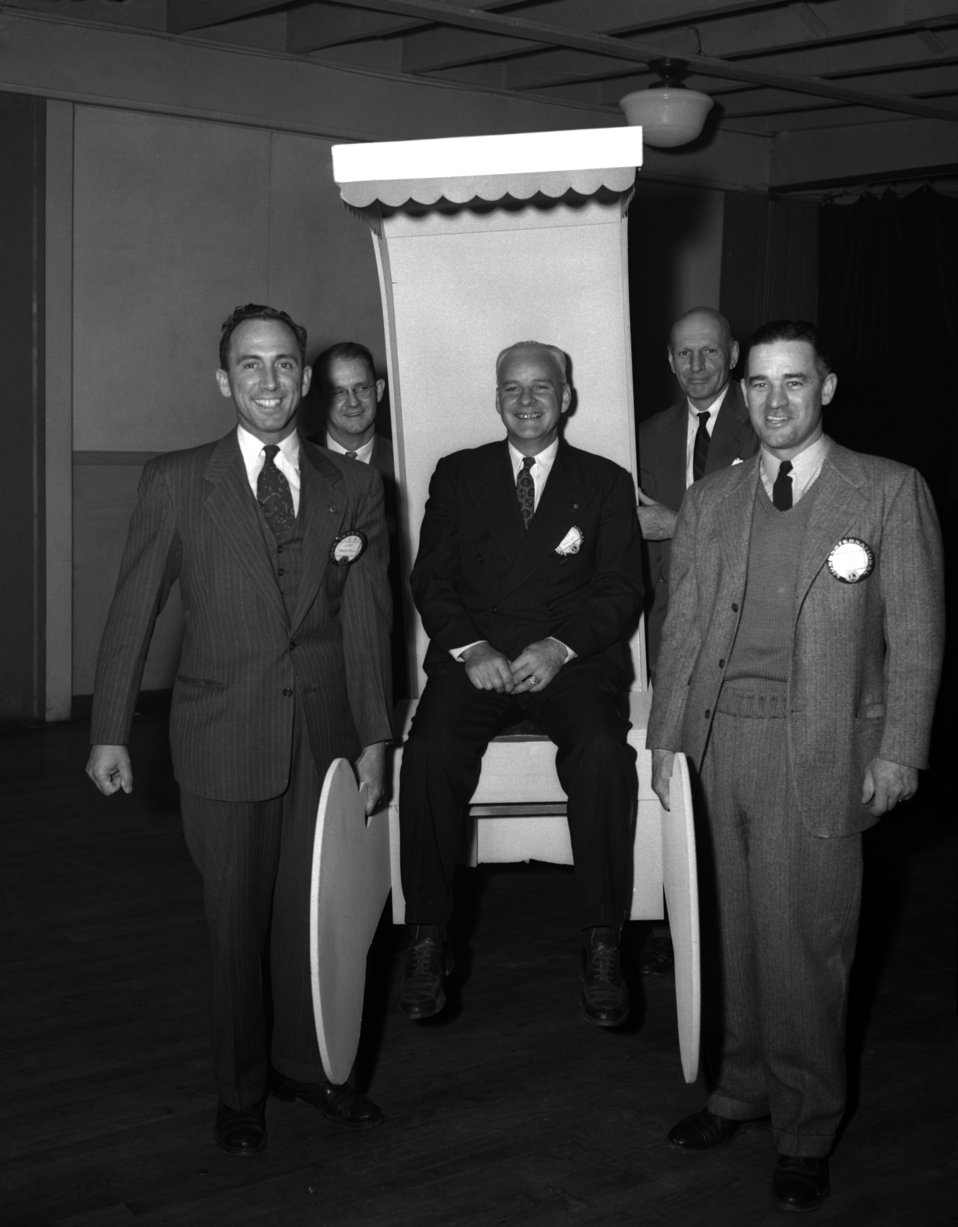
Lyons Club Oak Ridge

3336-4 DOE photo Ed Westcott 3-10-1947 Oak Ridge Tennessee